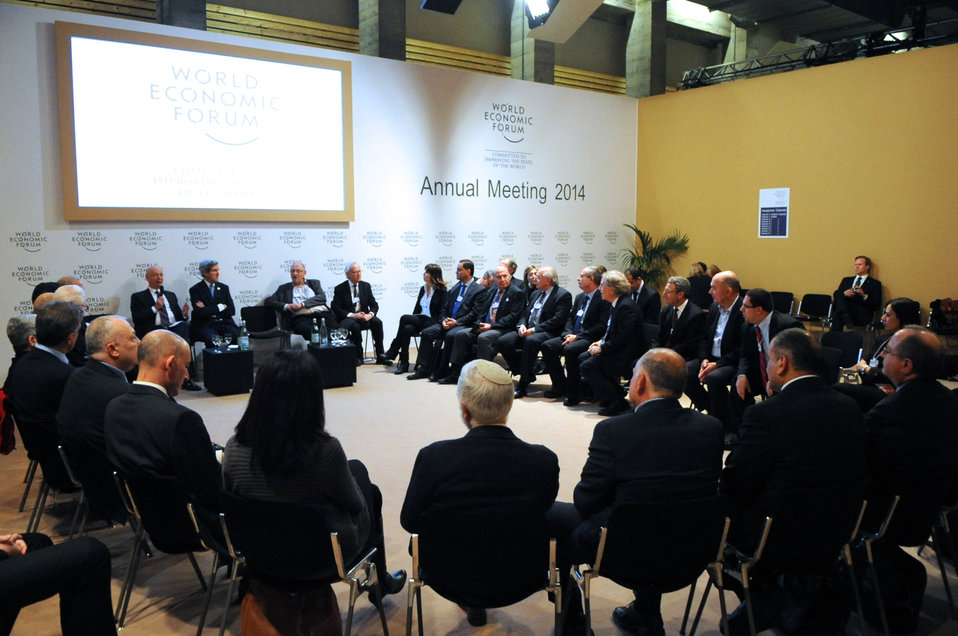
Secretary Kerry Participates in Roundtable Discussion With 'Breaking the Impasse' Group

U.S. Secretary of State John Kerry sits down Founder Klaus Schaub before a discussion with the pro-Middle East peace group 'Breaking the Impasse' on the sidelines of the World Economic Forum in Davos, Switzerland, on January 24, 2014.